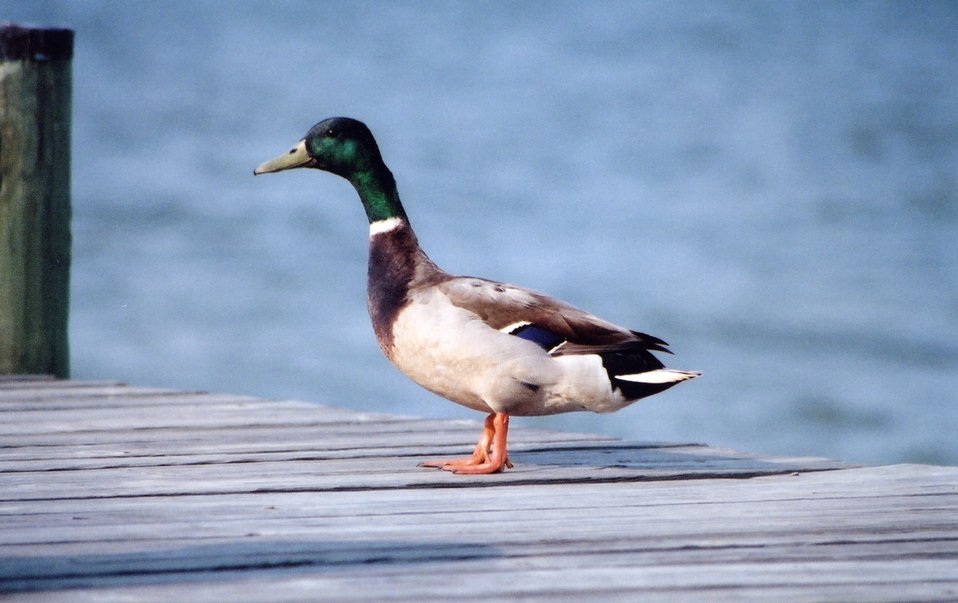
Mallard duck on a pier.